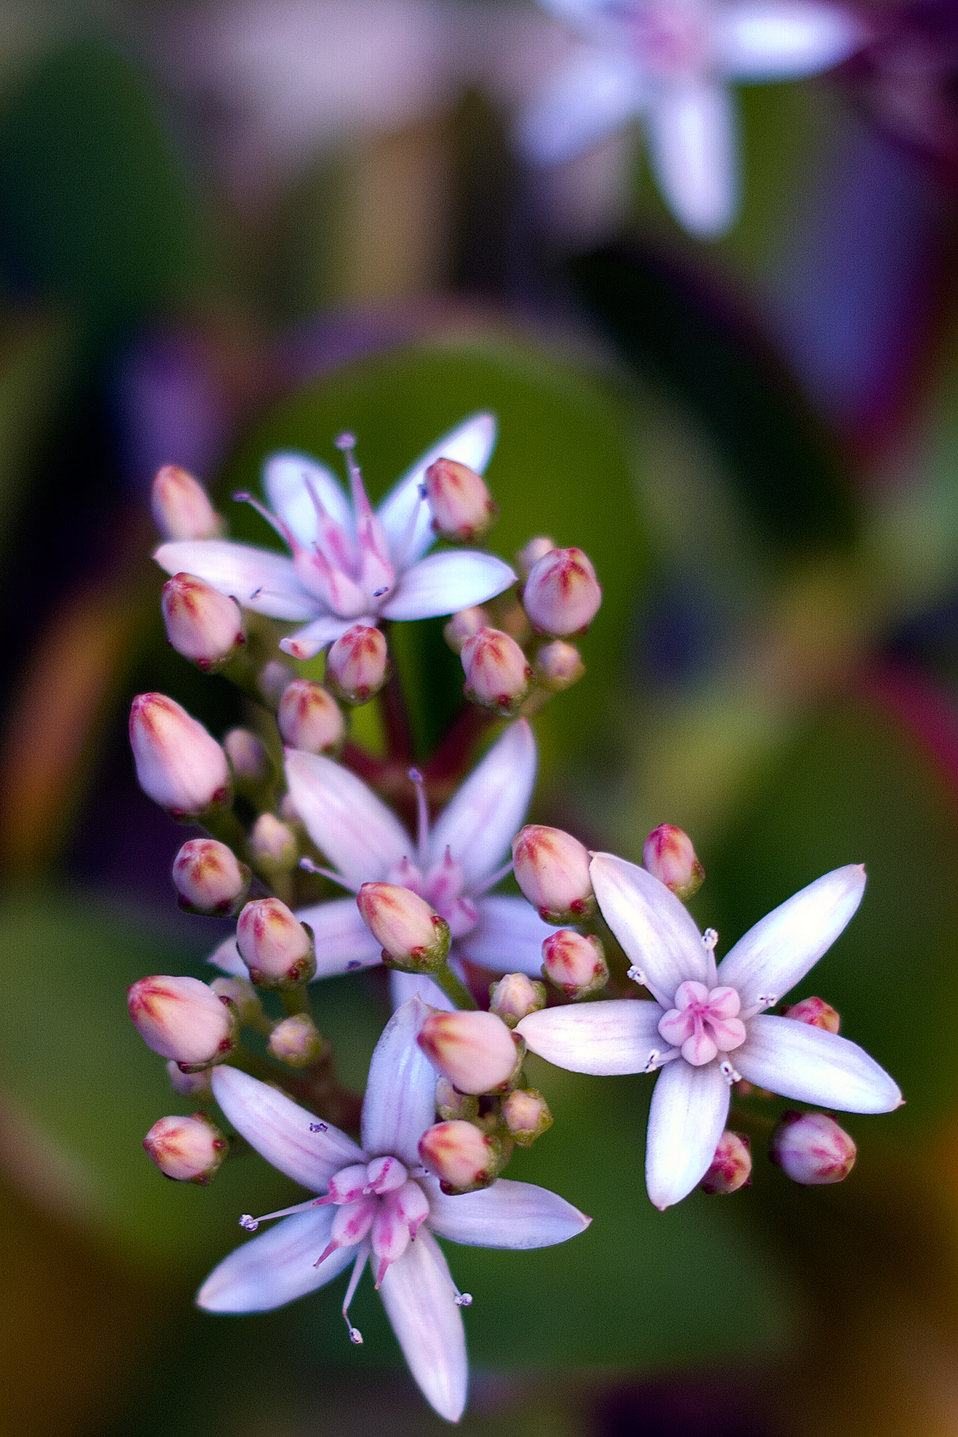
Jade plant flower

Macro of jade plant flowers.